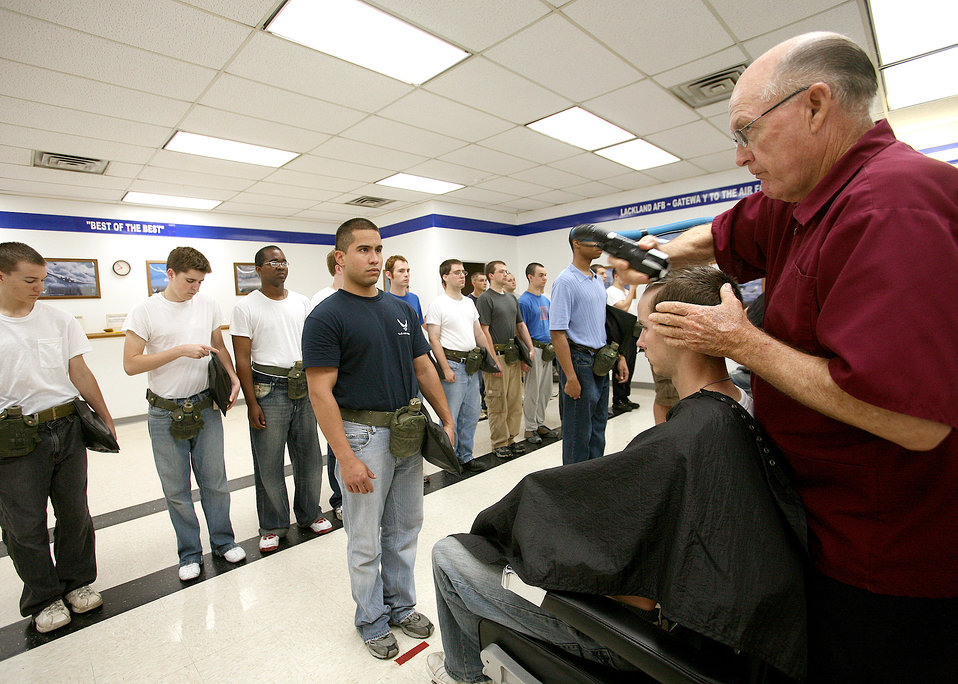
First steps of future Airmen

Air Force basic trainees from the 323rd Training Squadron's Flight 394 wait their turn May 2 for their first military haircut at Lackland Air Force Base. Mr. Lester West (at right) can give a clipper cut in less than two minutes. He has been at Lackland for 46 years.